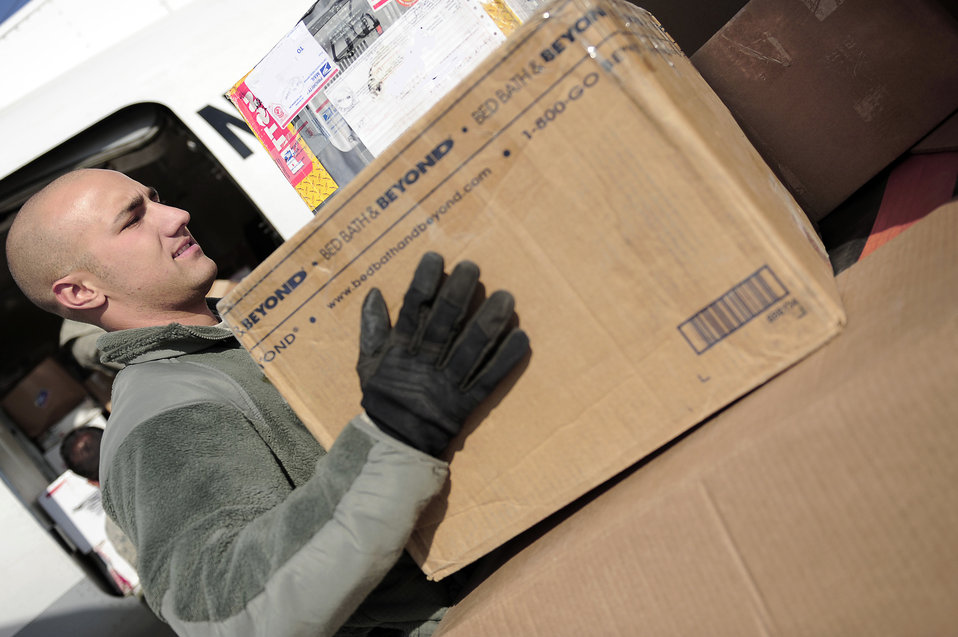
Moving the goods

Senior Airman Joshua Shaffer loads mail into an aircraft outbound to a nearby forward operating base Jan.12, 2010 at Bagram Airfield, Afghanistan. Airman Shaffer is assigned to the 455th Expeditionary Aerial Port Squadron.